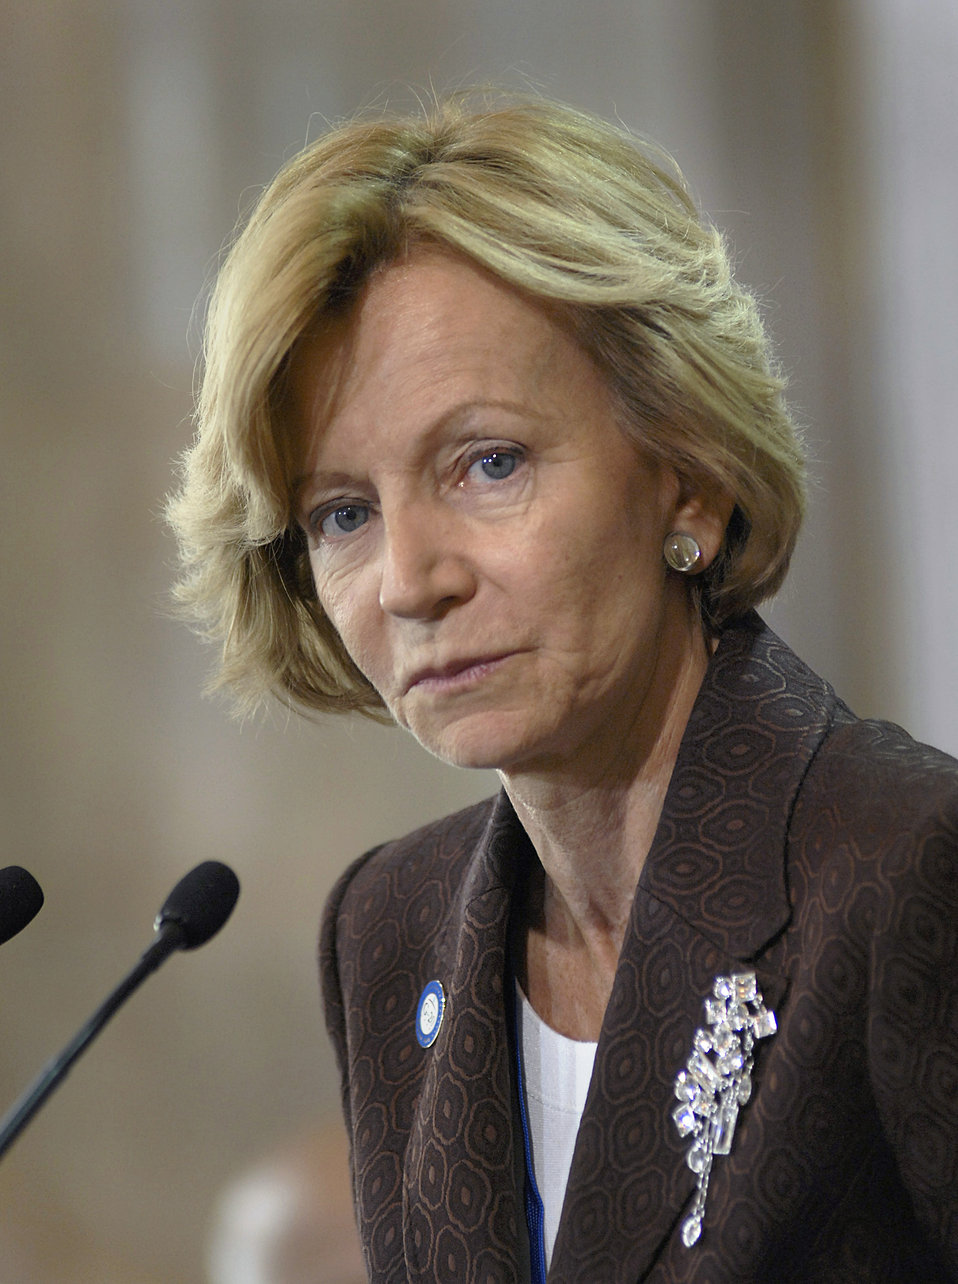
Announcement on International Commitment to Fight Global Hunger and Poverty, 4/22/2010

Elena Salgado, Spanish Second Vice President and Minister of Finance, at the Announcement on a new International Commitment to Fight Global Hunger and Poverty on April 22.